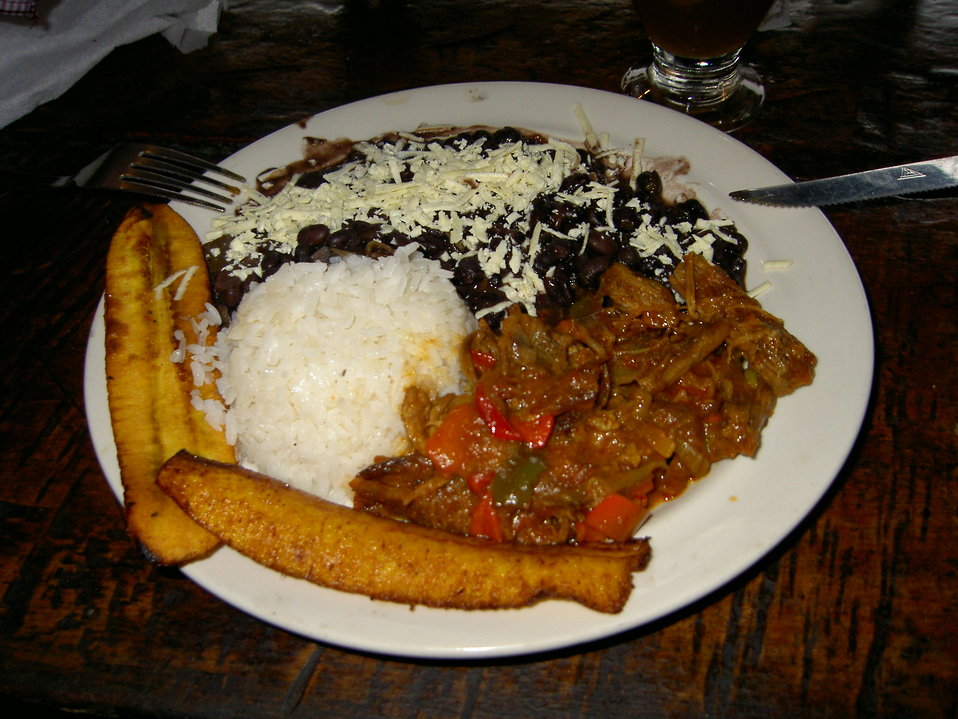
(Seamar31, Pabellón Criollo from a restaurant south of Maracay, 22 July 2006)